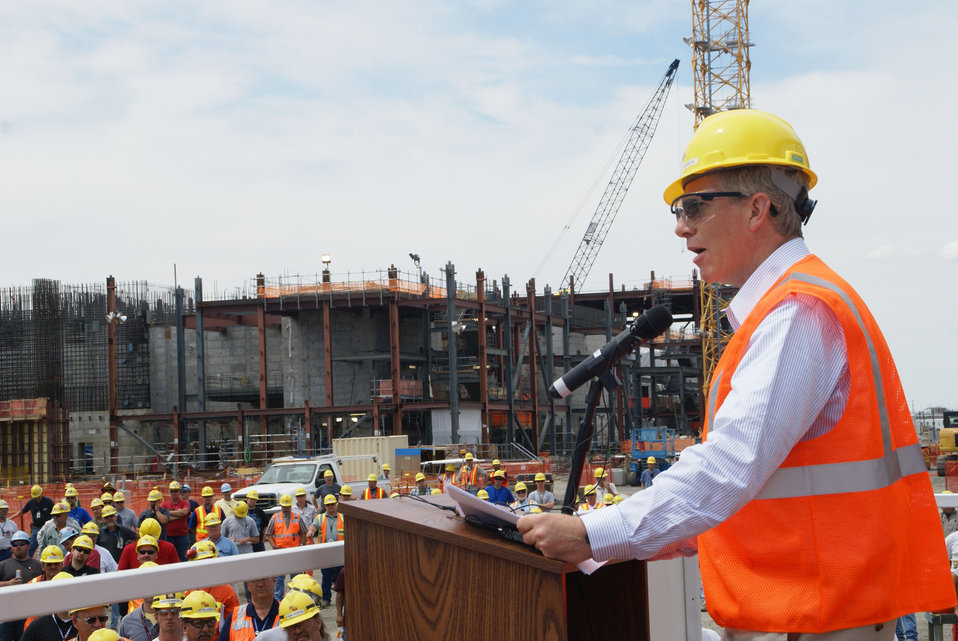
DEP SEC PONEMAN AT VIT PLANT 2011

Deputy Secretary Daniel Poneman tours the Hanford Waste Treatment Plant in 2011.